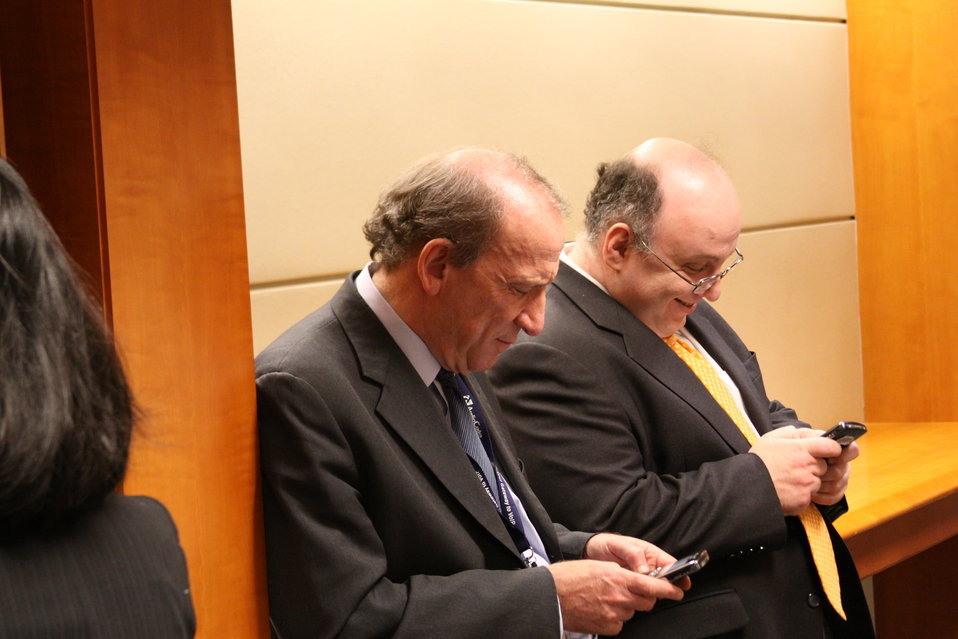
Open Commission Meeting - 2/18/2010

The Federal Communications Commission will hold an Open Meeting in Washington, DC. on February 18, 2010, which will include the following items:

E-Rate: An Order and Notice of Proposed Rulemaking to enable schools that receive funding from the E-Rate program to allow members of the general public to use the schools' Internet access during non-operating hours at no additional cost to the Universal Service Fund. This order and notice do not permit or require any changes to E-Rate applications due on February 11, 2010; Ex Parte Reform: A Notice of Proposed Rulemaking to improve the transparency and effectiveness of the FCC's decision-making process by reforming the ex parte rules; Procedural Reform: A Notice of Proposed Rulemaking to enhance the efficiency, openness, and transparency of the Commission's proceedings by improving and modernizing certain organizational and procedural rules; National Broadband Plan Status Report: Commission staff will report on the status of the National Broadband Plan, providing a framework for the national purposes portion of the Plan.